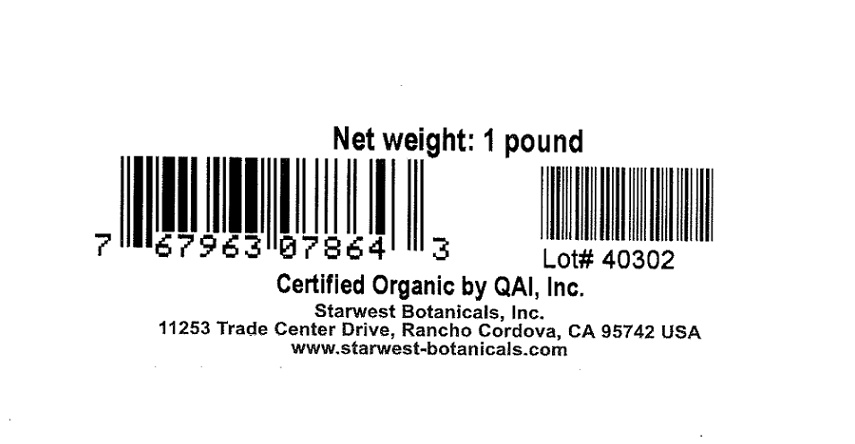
RECALLED - Organic Celery Seed

December 14, 2011 - Starwest Botanicals Recalls Starwest Organic Celery Seed. Due to Potential Salmonella Contamination.